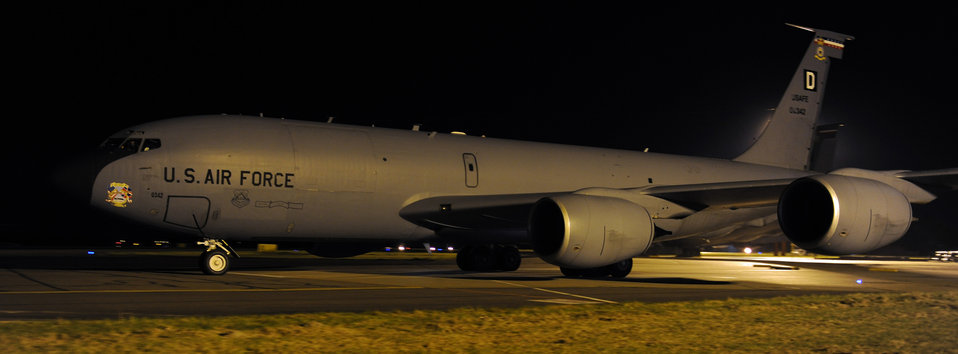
Joint Task Force Odyssey Dawn

110319-F-DE018-122 -- RAF MILDENHALL, England (March 19, 2011) -- A KC-135 Stratotanker taxies before takeoff for a refueling mission in support of Joint Task Force Odyssey Dawn. JTF Odyssey Dawn is the U.S. Africa Command task force established to provide operational and tactical command and control of U.S. military forces supporting the international response to the unrest in Libya and enforcement of United Nations Security Council Resolution (UNSCR) 1973. UNSCR 1973 authorizes